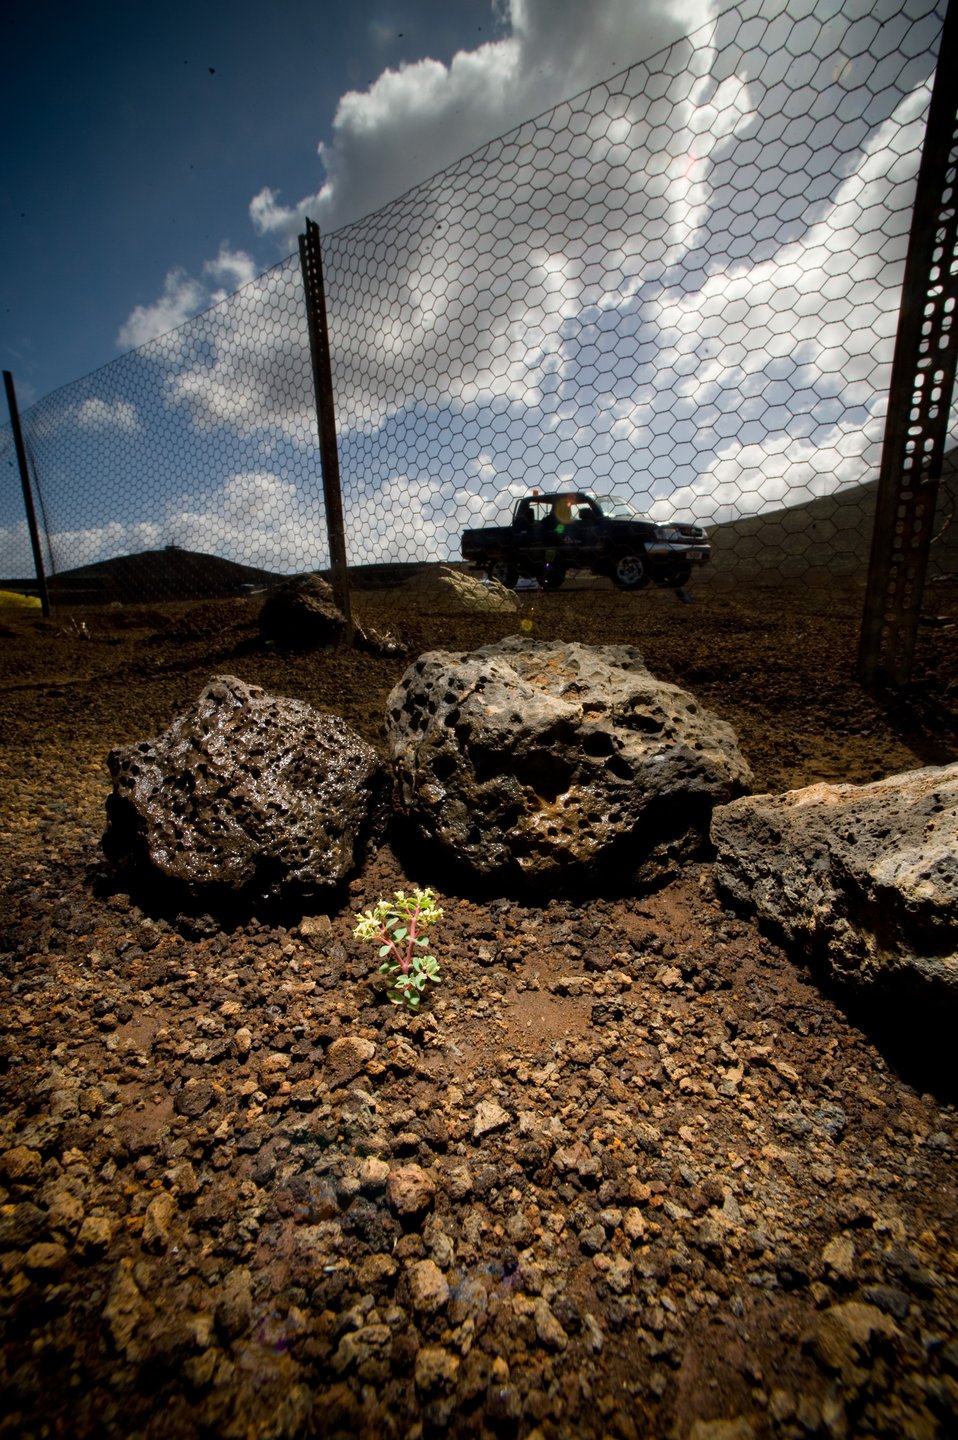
Robert's Plants

Ascension Spurge (E. origanoides), an endangered species of plant found only on the Ascension Island, predominantly on the property used by the 45th Operations Group, Detachment 2, Ascension Auxiliary Airfield (AAF), in the South Atlantic Ocean. The small plot of fenced land supports seed collection by a British conservation organization on the island. Although, all U.S. Air Force bases have environmental programs, this small remote island environment allows easy observation of the efforts supporting the endangered spurge plant and self-sufficient water, power and waste programs.